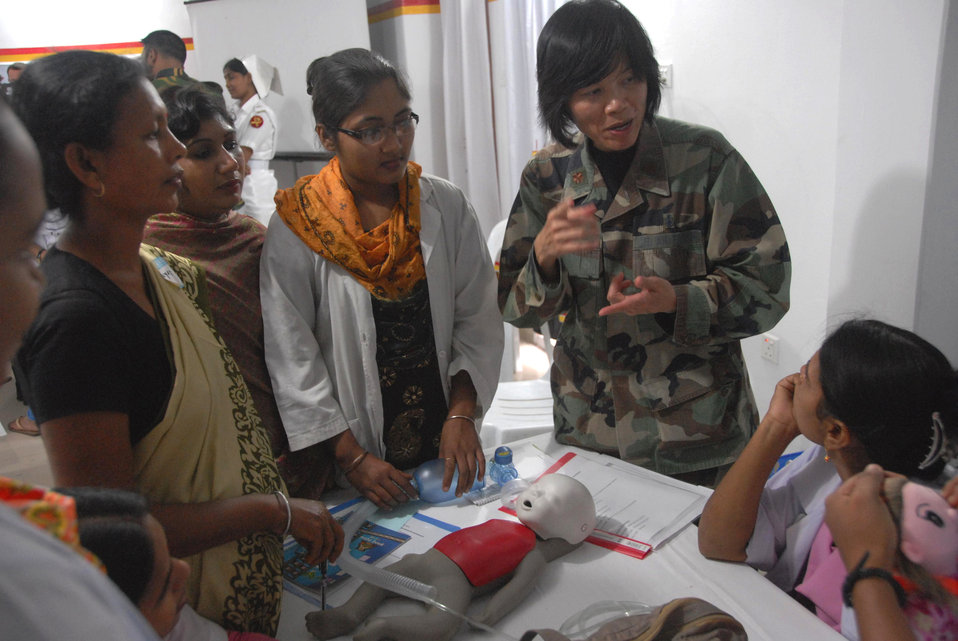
Neonatal care

Maj. Chung Lee discusses resuscitative measures for infants with Bangladeshi health care providers during a subject matter expert exchange June 12, 2010, at the Smiling Sun Clinic in Jessore, Bangladesh. Major Lee is a nurse and international health specialist for the 13th Air Force at Joint Base Pearl Harbor-Hickam, Hawaii.